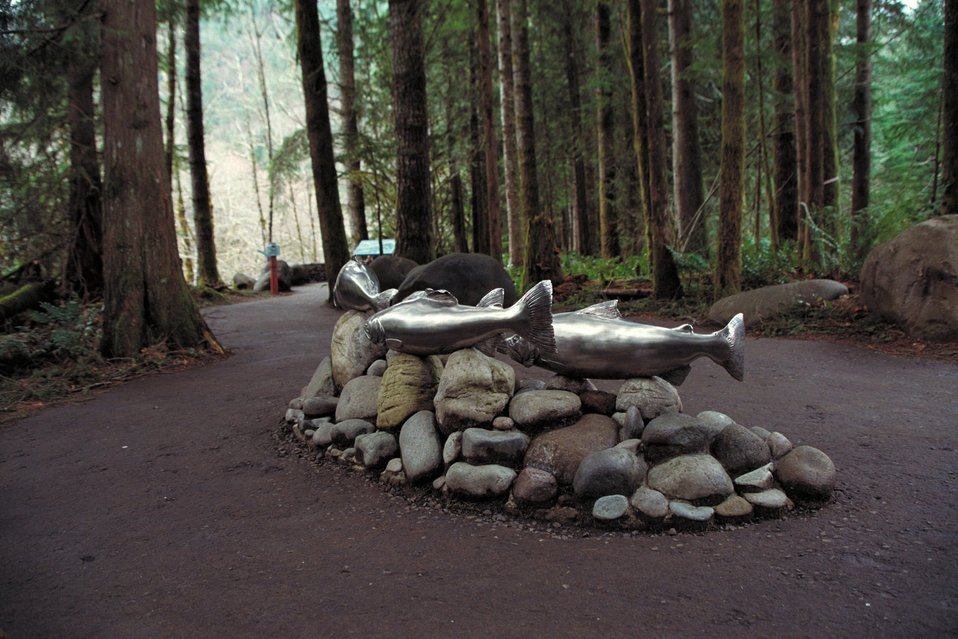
Cascade Stream Watch is an environmental education program conducted at BLM's Wildwood Recreation site.